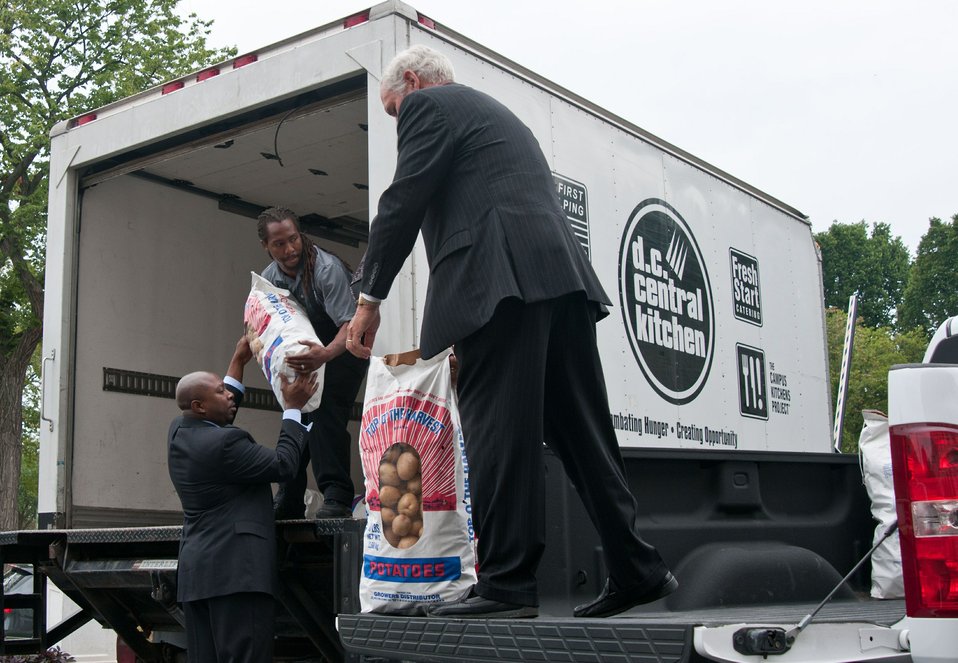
Donation complete, Agriculture Under Secretary Farm and Foreign Agriculture Service (FFAS) Michael Scuse (right) donated 1,000 pounds of potatoes to DC Central Kitchen, in participation with the Feds Feed Families Food Drive, on Monday August 20, 2012 in front of the Agriculture headquarters in Washington, D.C. FFAS Deputy Under Secretary Karis Gutter (center) transfer the 20 50-pound bags from nearby pick-up to cargo truck. Under Secretary Scuse, a farmer himself purchased and loaded his pick-up this weekend with half a ton of potatoes at nearby Wicks farm, in Delaware. Secretary Scuse farms 1,700 acres of corn, soybeans and wheat. He says that this is the first of many more donations this year. DC Central Kitchen Fleet Coordinator/Transportation Driver Anthony Turner (left) received the spuds in one of the kitchen’s trucks. When asked when the potatoes will get to people’s mouths, he replied, “Couple hours. Once I get it to the kitchen, they have volunteers there, we work off volunteers, (and) if it wasn’t for the volunteers we would not run. Once I get it back, the volunteers will cut it up, shave them, dice or whatever they are going to do, they are going to put it into soup, or something; they (the recipients) will get it by tonight.”